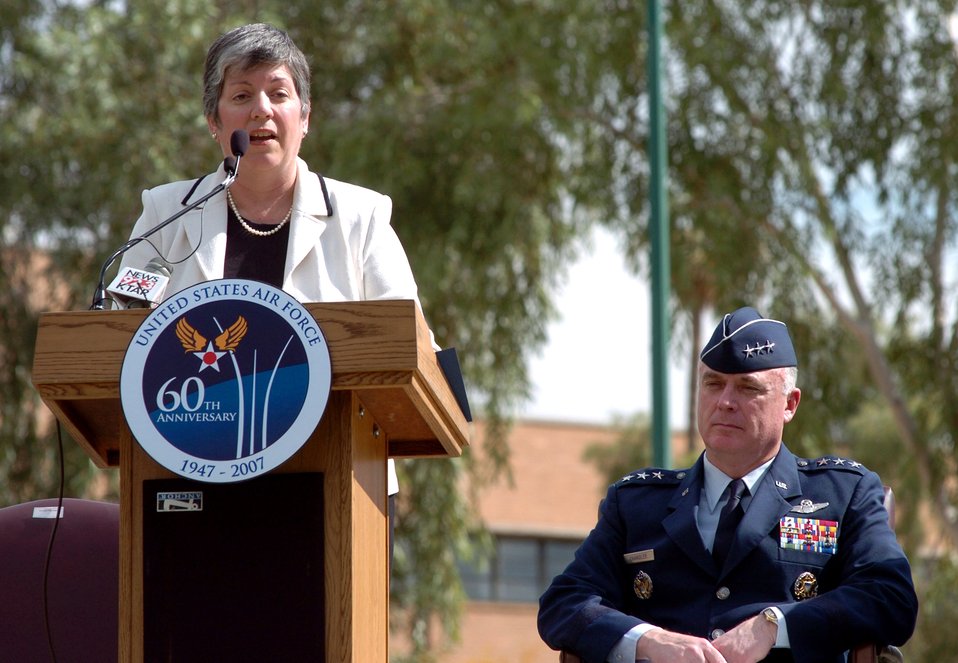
Air Force Week kicks off in Phoenix

Arizona Gov. Janet Napolitano reads the signed proclamation declaring the week of March 19-25 Air Force Week. Several bus loads of Airmen from nearby Luke Air Force Base joined Arizona state officials and Air Force senior leaders at the state's capital March 19 to kick off the event.